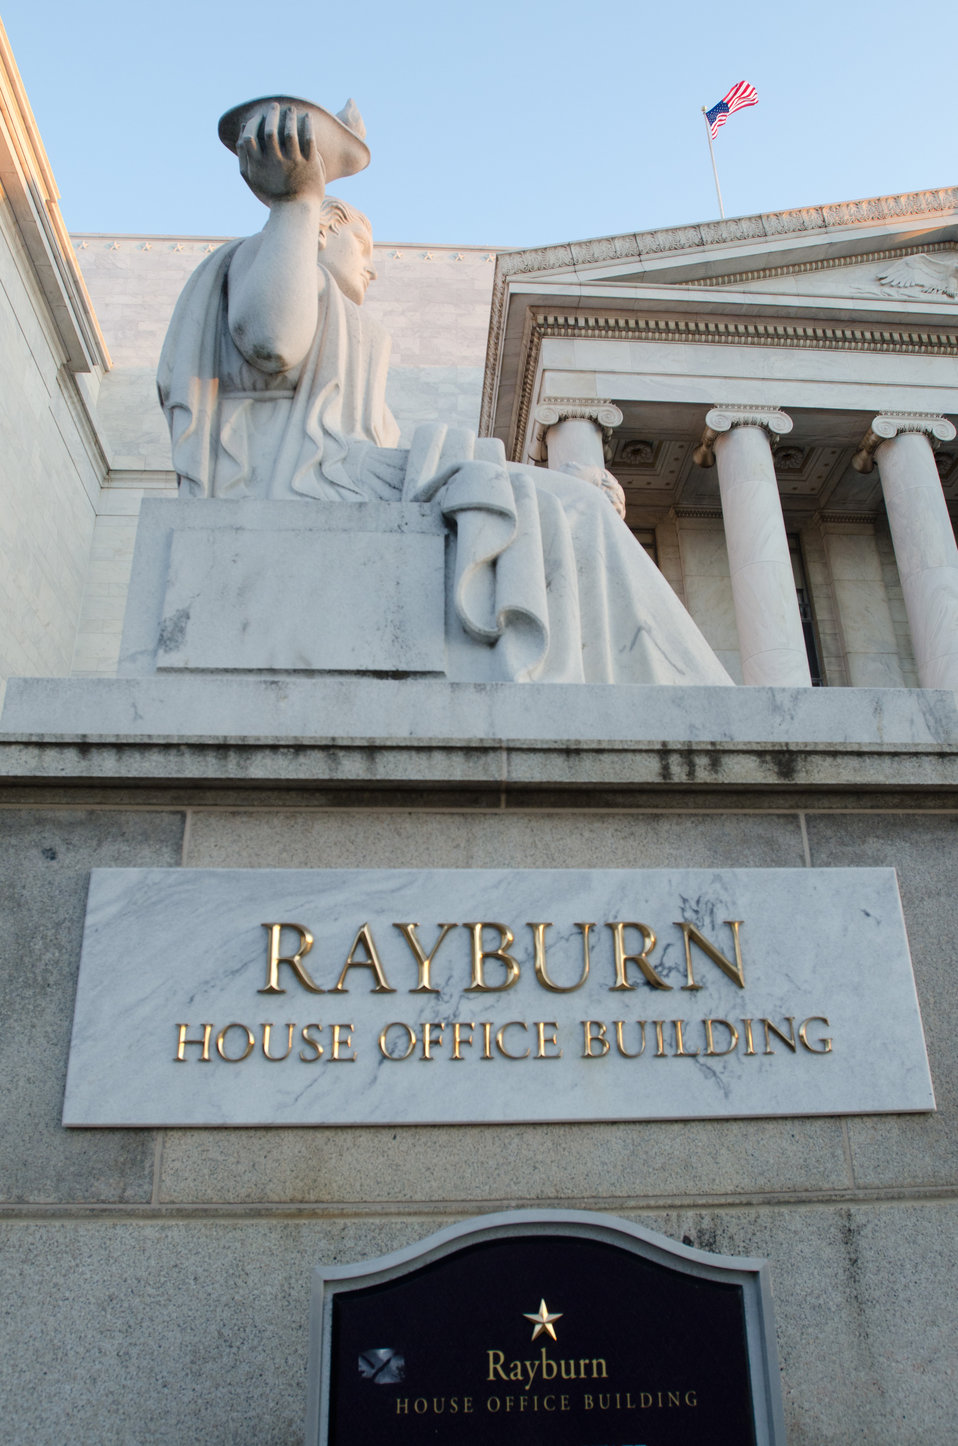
Information, pamphlets and agents from the Research, Education, and Economics (REE) U. S. Department of Agriculture attended Congressional Visits Day at the Rayburn House Office Building in Washington, DC, on Wednesday, April 6, 2011. The event allows U.S. representatives, staff and Capitol Hill visitors the opportunity to learn about the REE's mission and the impact on America. REE's leadership responsibility is to advance scientific knowledge related to agriculture through research, extension, and education.